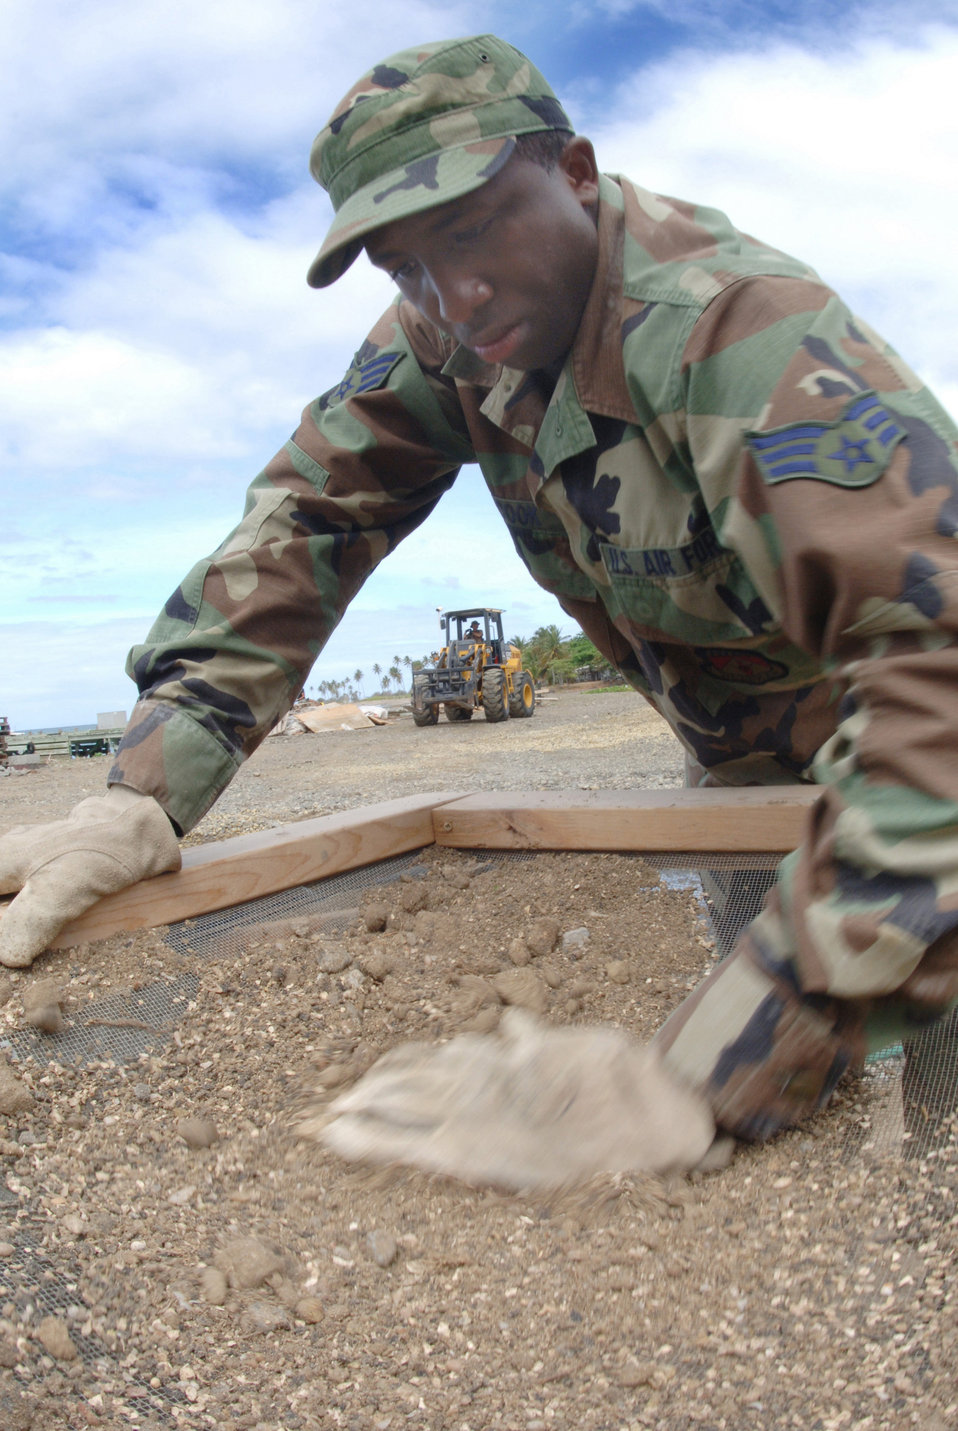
Reserve engineers in Saint Lucia

Senior Airman Julian Cook grates rocks from sand to make mortar for the Saint Lucia project on Saturday, April 8, 2006. The project includes building an operations center and barracks for the police force in support of St. Lucia's counter-drug operations. Airman Cook is with the 445th Civil Engineer Squadron at Wright-Patterson Air Force Base, Ohio.